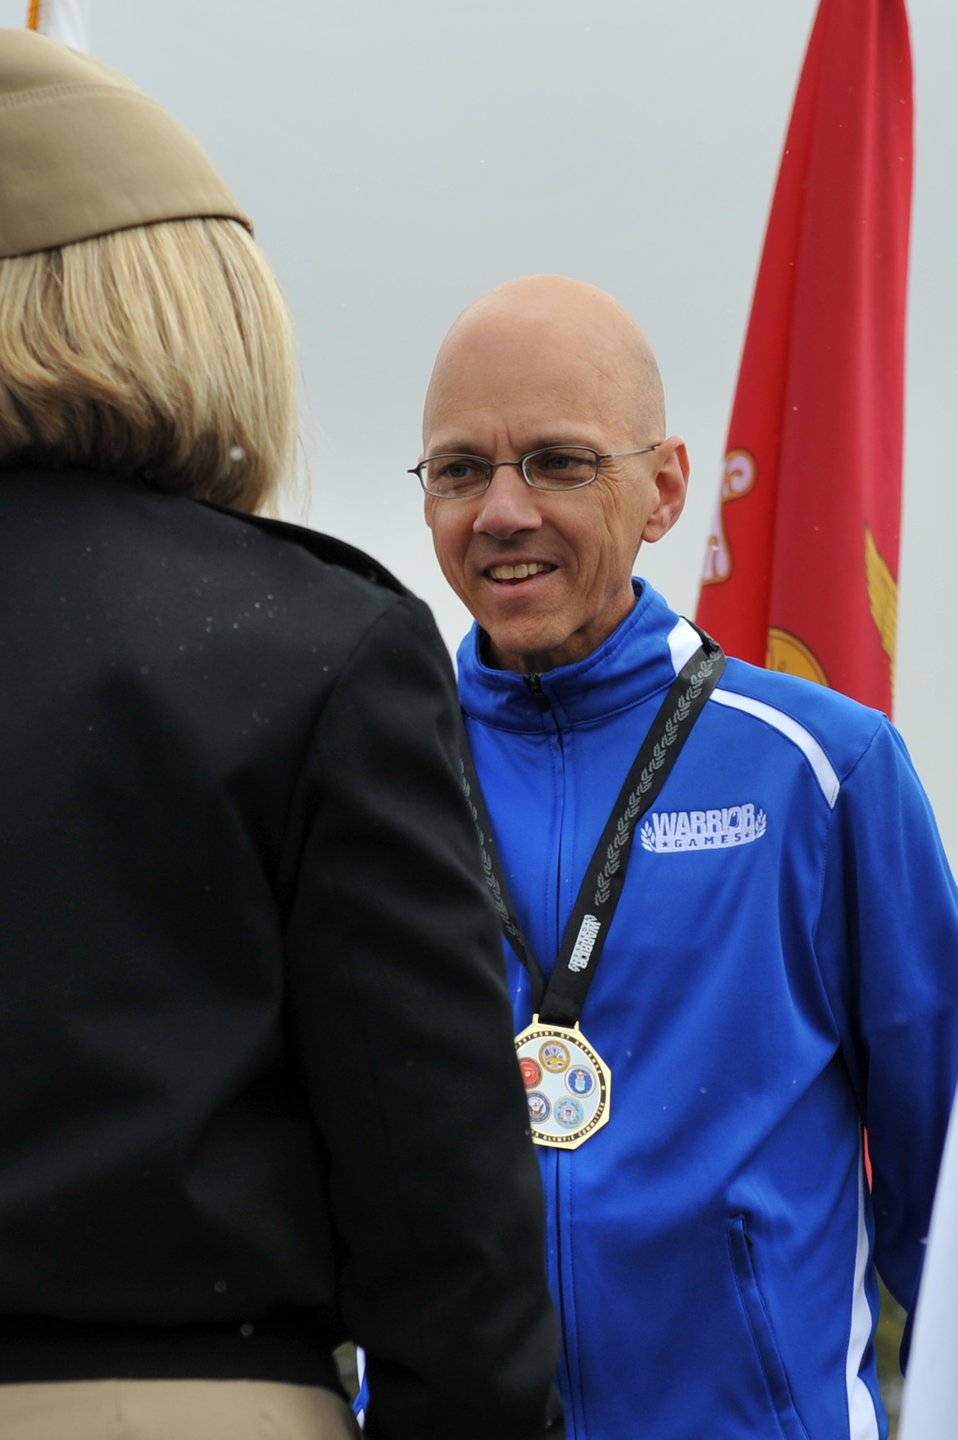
Warrior Games AF Cycling

Senior Master Sgt. Michael Sanders receives a gold medal for in the 10-kilometer recumbent bike race for the inaugural Warrior Games May 13, 2010, at the U.S. Academy in Colorado Springs, Colo. Sergeant Sanders is one of some 200 disabled veterans participating in the Paralympic-style competition May 10 through 14.